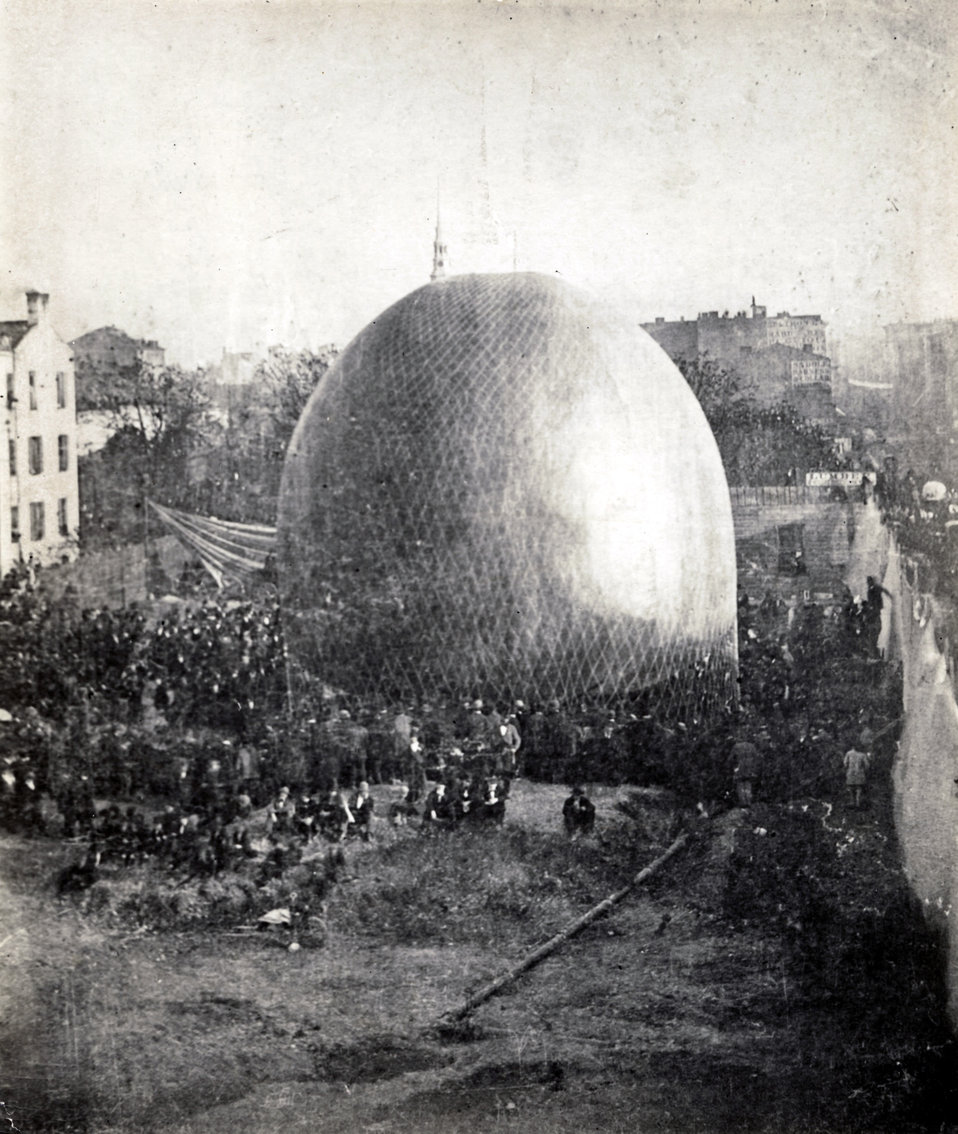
Balloon

Thaddeus Lowe's balloon, Enterprise, is inflated in Cincinnati in 1861. Mr. Lowe demonstrated the balloon for President Abraham Lincoln.